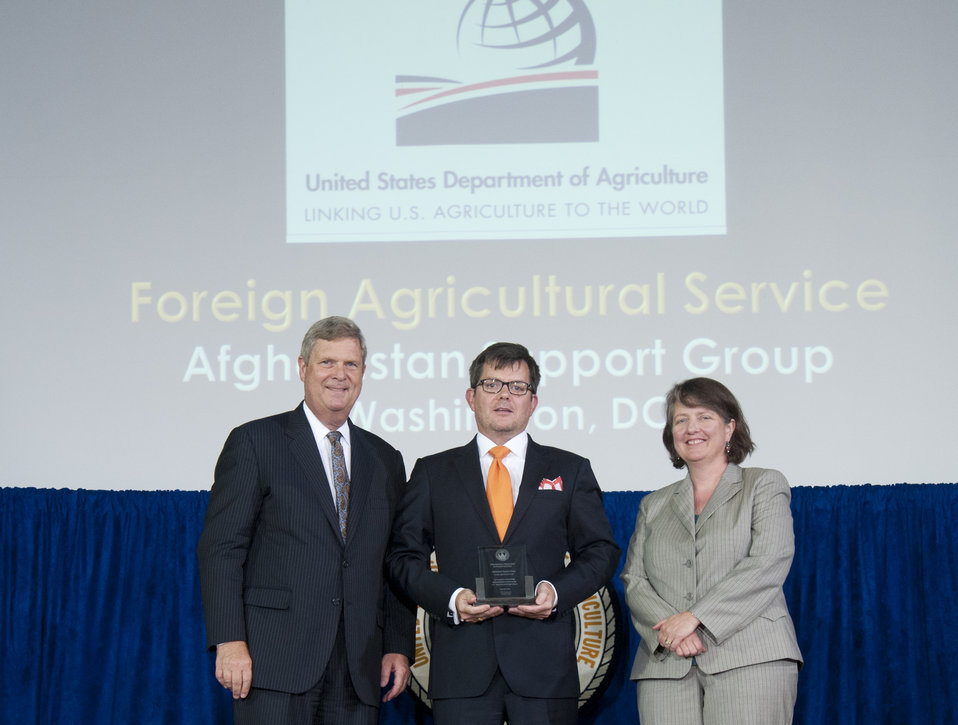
Agriculture Secretary Tom Vilsack and Agriculture Deputy Secretary Kathleen Merrigan present the Secretary’s Honor Award to Afghanistan Support Team Foreign Agricultural Service (FAS) group leader Bobby G. Richey Jr. at the U.S. Department of Agriculture (USDA) 64th Annual Honor Awards Ceremony in Washington, D.C. on Wednesday, Sept. 12, 2012. The Afghanistan Support Team provided exemplary support service for deployed USDA employees in Afghanistan.